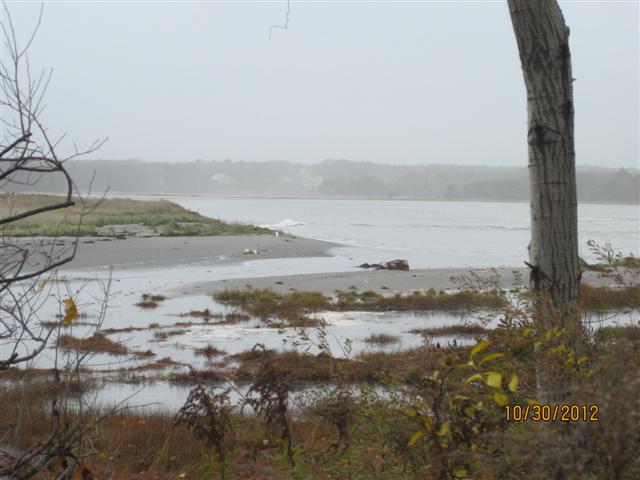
Hurricane Sandy hit Rachel Carson National Wildlife Refuge (ME)

A new channel from the Battson River at Marshall Point.